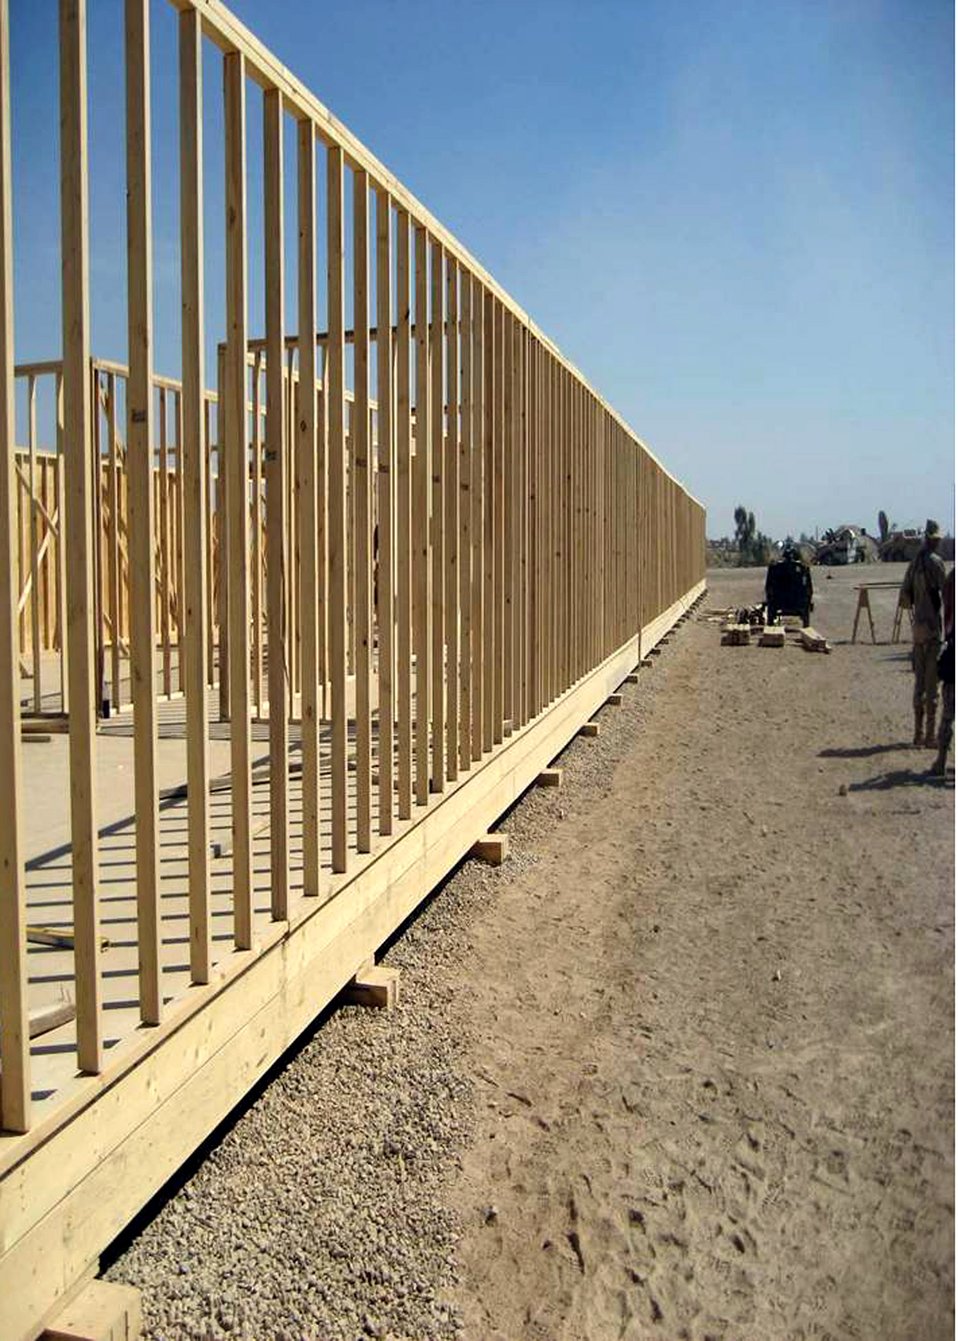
RED HORSE helps build combat brigade base in 45 days

Airmen from the 557th Expeditionary RED HORSE Squadron complete a